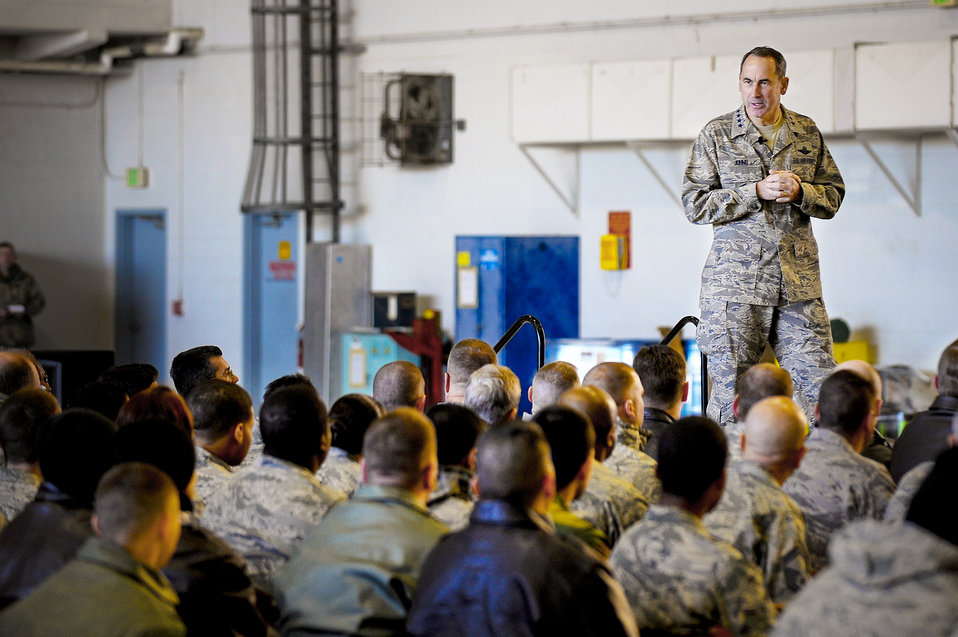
Mobility commander visits Georgia, Florida wings

Gen. Raymond E. Johns Jr., speaks to the Airmen of the 6th Air Mobility Wing and the 927th Air Refueling Wing during a